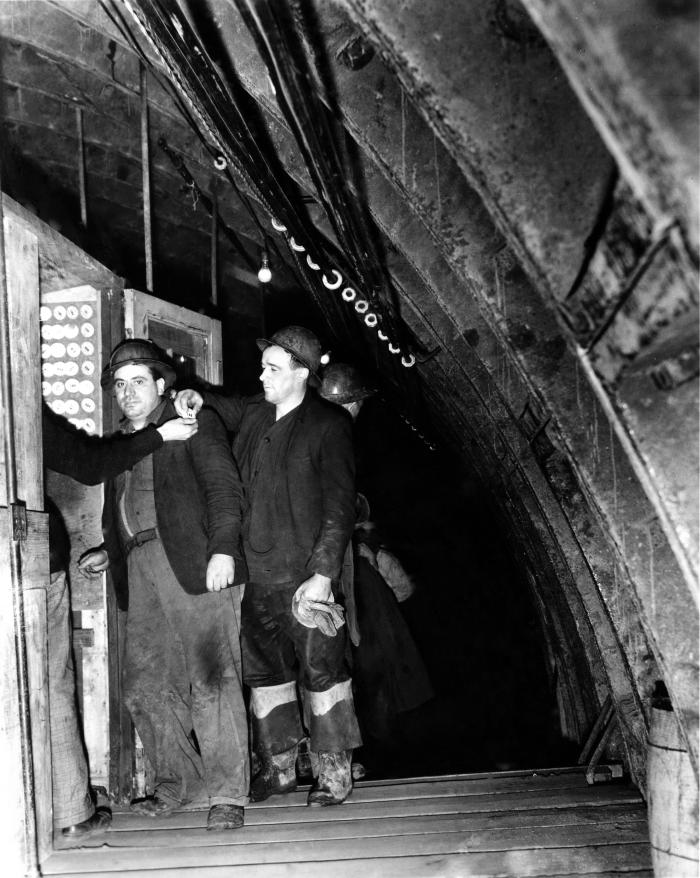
This historical image was provided by the Center for Disease Control's (CDC), National Institute for Occupational Safety and Health (NIOSH). The photograph depicted two tunnel workers inside the Queens Midtown Tunnel, in Queens, New York, while the subterranean passageway was under construction, in the process of turning in their badges for the day. Note that each was wearing a protective hardhat, but no gloves, filtered breathing masks, or ear plugs though it cannot be determined from this image if these items were necessary.